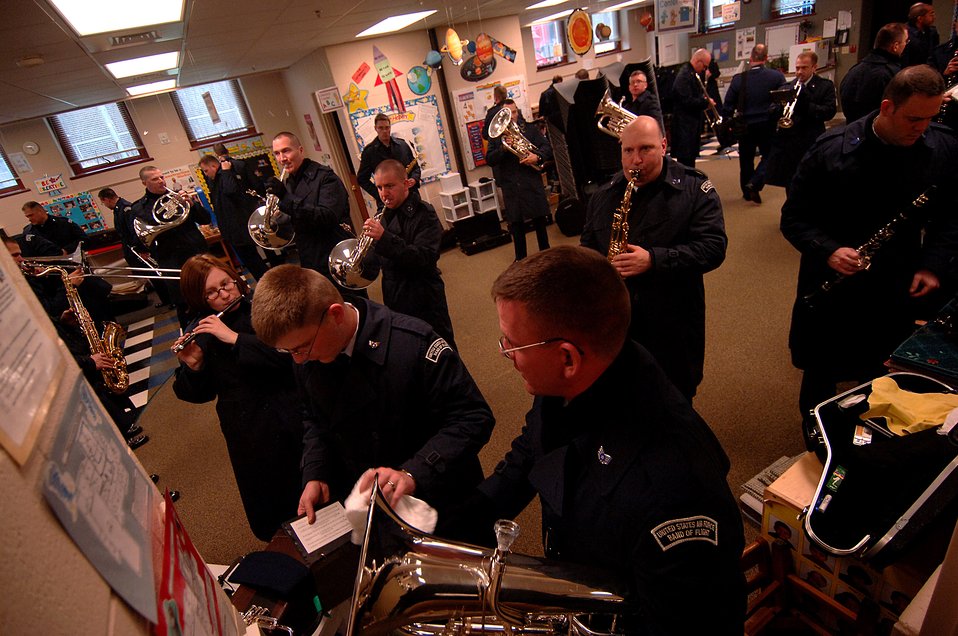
Air Force band plays final tribute for President Ford

Air Force musicians warm up to rehearse for the funeral service for President Gerald R. Ford after arriving at Grace Episcopal Church Jan. 1 in Grand Rapids, Mich.